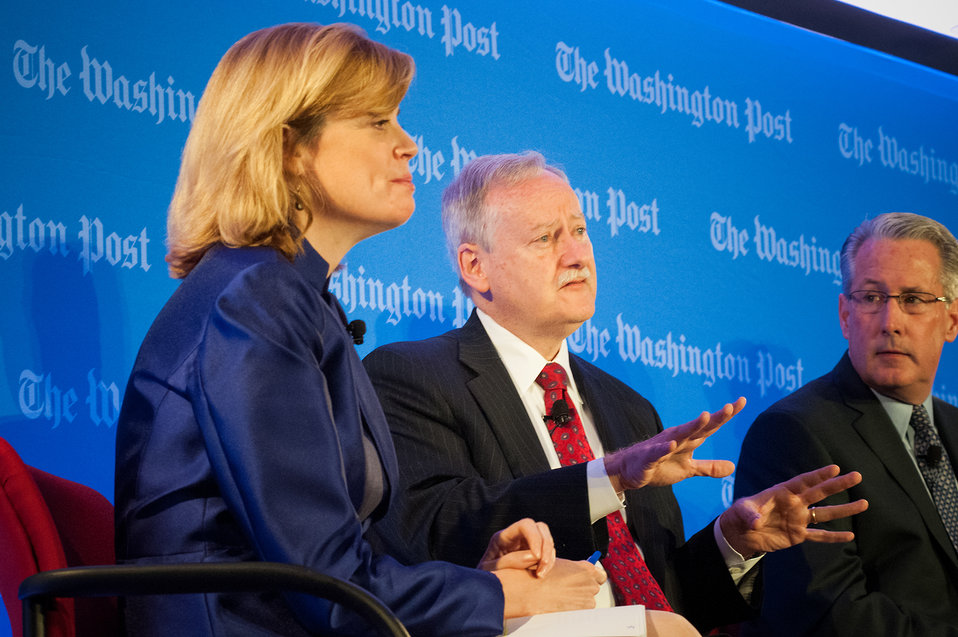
United Fresh Produce Association President and Chief Executive Officer (CEO) Tom Stenzel discusses From the Farm: Innovations and the Latest Advances in Food Production during the annual live forum, “Future of Food: Building a Sustainable Food System 2013,” sponsored by the Washington Post Live in Washington, D.C. on Wednesday, May 22, 2013. Agriculture Secretary Tom Vilsack, leading agricultural, government and nutrition experts discussed expanding healthy, sustainable food systems including public-private partnerships, the market’s role in nutrition and the future of agricultural innovation.